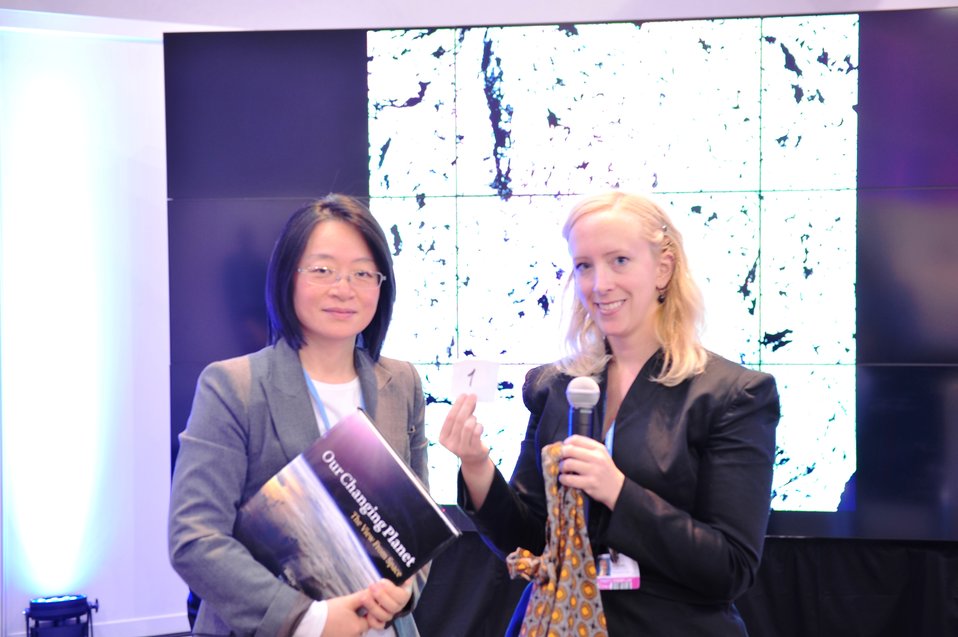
Raffle Winner of a NASA Book

The raffle winner of a NASA book poses for a photo with Master of Ceremonies Dr. Jenna Jadin of the U.S. Department of Agriculture (USDA) at the U.S. Center at the 18th Session of the Conference of the Parties to the UN Framework Convention on Climate Change (COP-18) in Doha, Qatar, November 28, 2012.